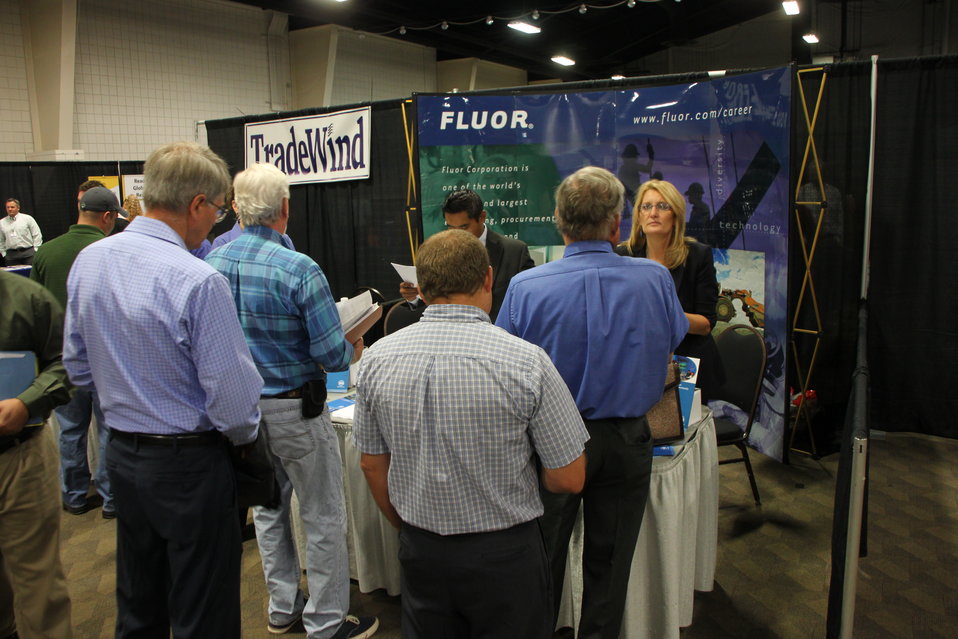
Richland job fair

DOE contractor CH2M HILL Plateau Remediation Company sponsored a job fair in August 2011 with more than 120 employers looking to meet Hanford Site employees.